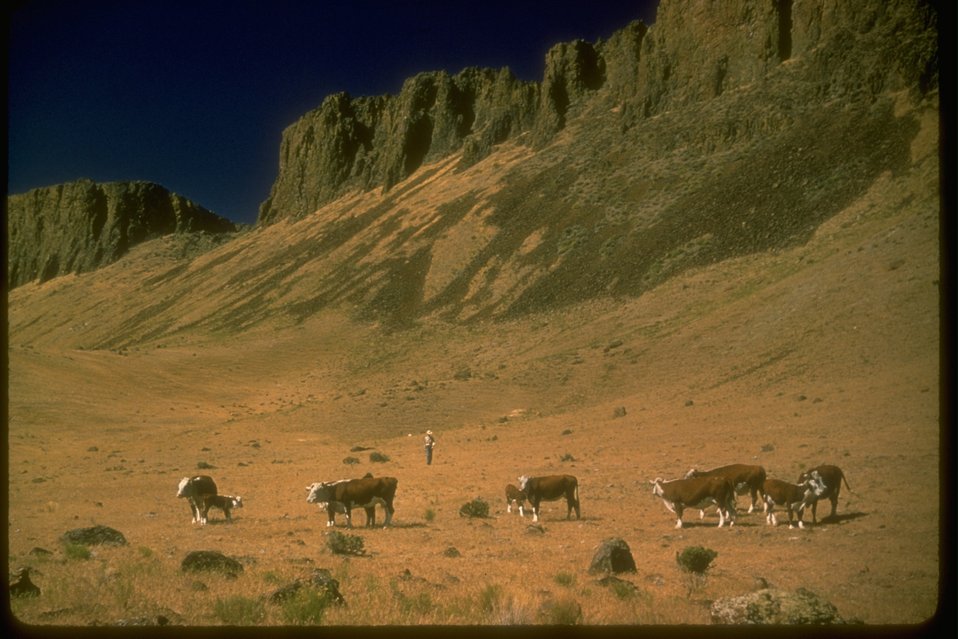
Rancher out with his cattle on the rangeland just below the Rimrock.